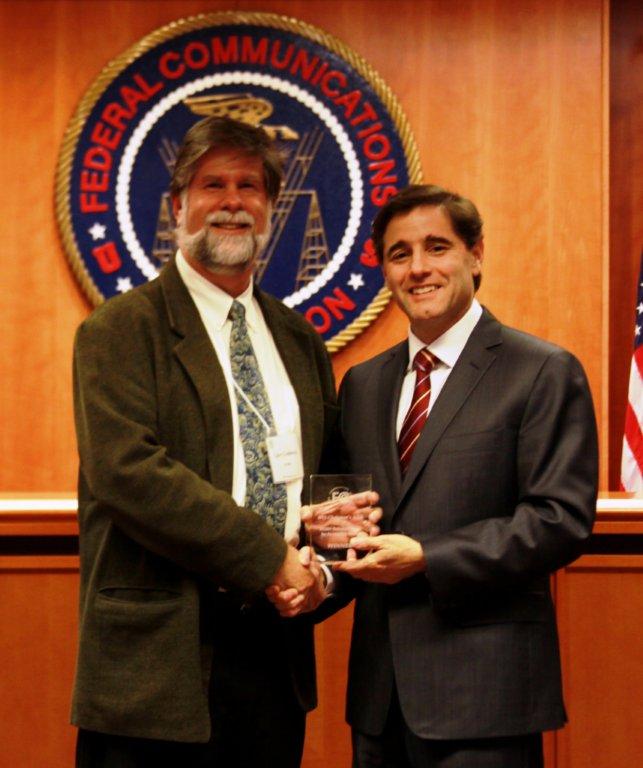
Larry Goldberg, WGBH National Center for Accessible Media, Accepts Mobile Applications Award

Larry Goldberg, accepts Mobile Applications award from Chairman Genachowski for WGBH National Center for Accessible Media.